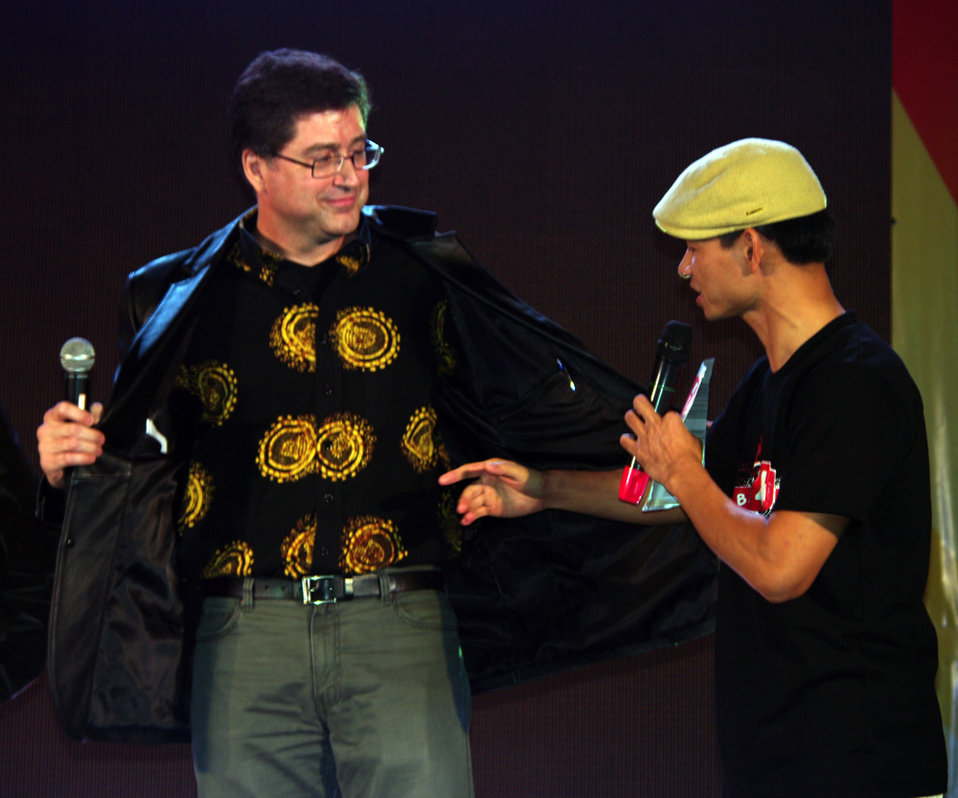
USAID supports dance4life to raise awareness of HIV and fight stigma in Vietnam

USAID's Health Office Director Jonathan Ross shows off his shirt bearing patterns of HIV.